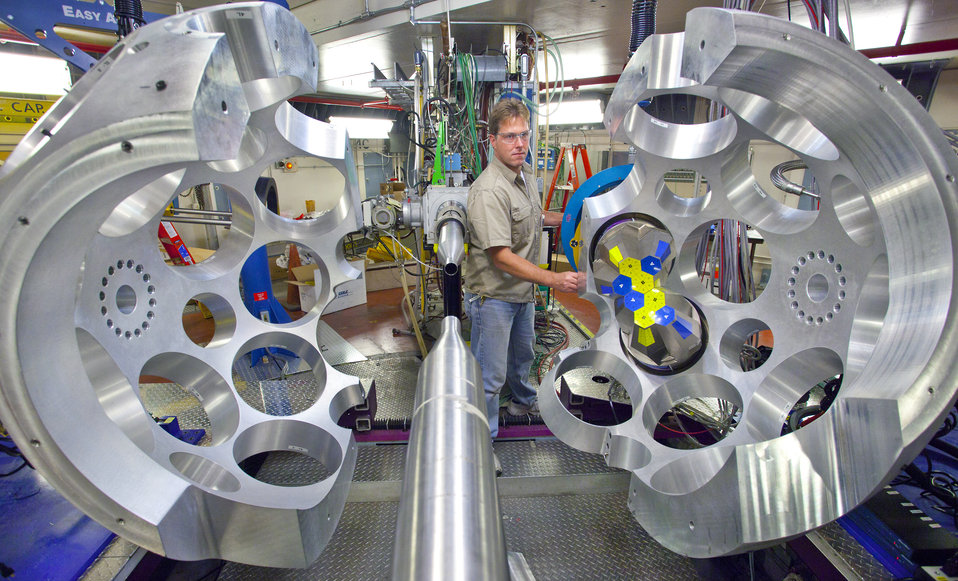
Loading detectors made in France into nuclear science's Gretina Gamma Particle Device at Lawrence Berkeley National Laboratory.